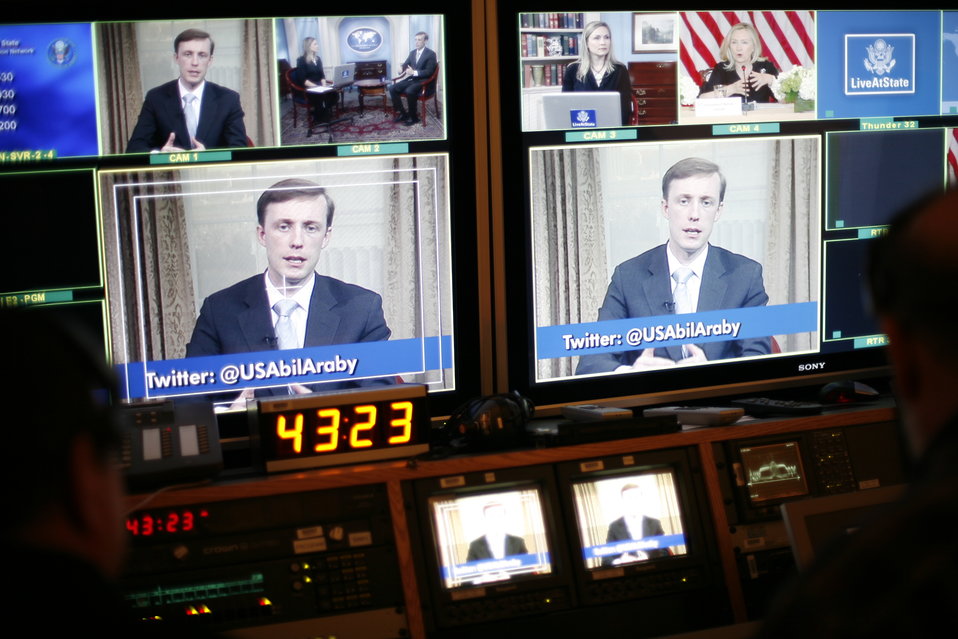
Jake Sullivan Participates in a LiveAtState

Jake Sullivan, Director of the Policy Planning Staff, participates in a LiveAtState, the State Department's interactive webchat platform for engaging with international media, on January 24, 2012.